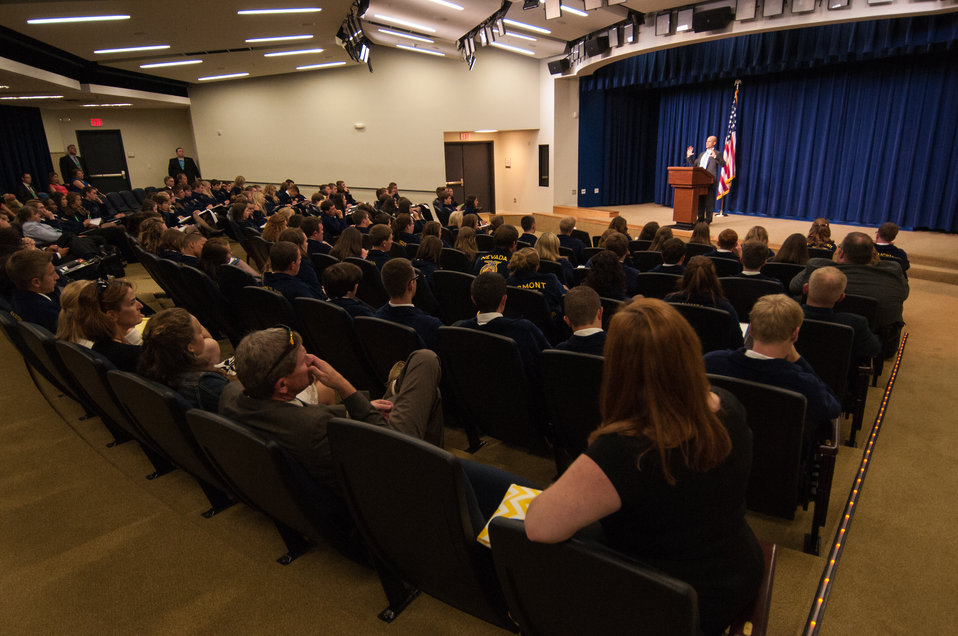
White House Chef Sam Kass speaks at a meeting of the White House Rural Council to an audience of the National State President’s Conference of the FFA on Wednesday, Jul. 24, 2013 in Washington, D.C. Chef Kass discussed nutrition and agriculture topics.